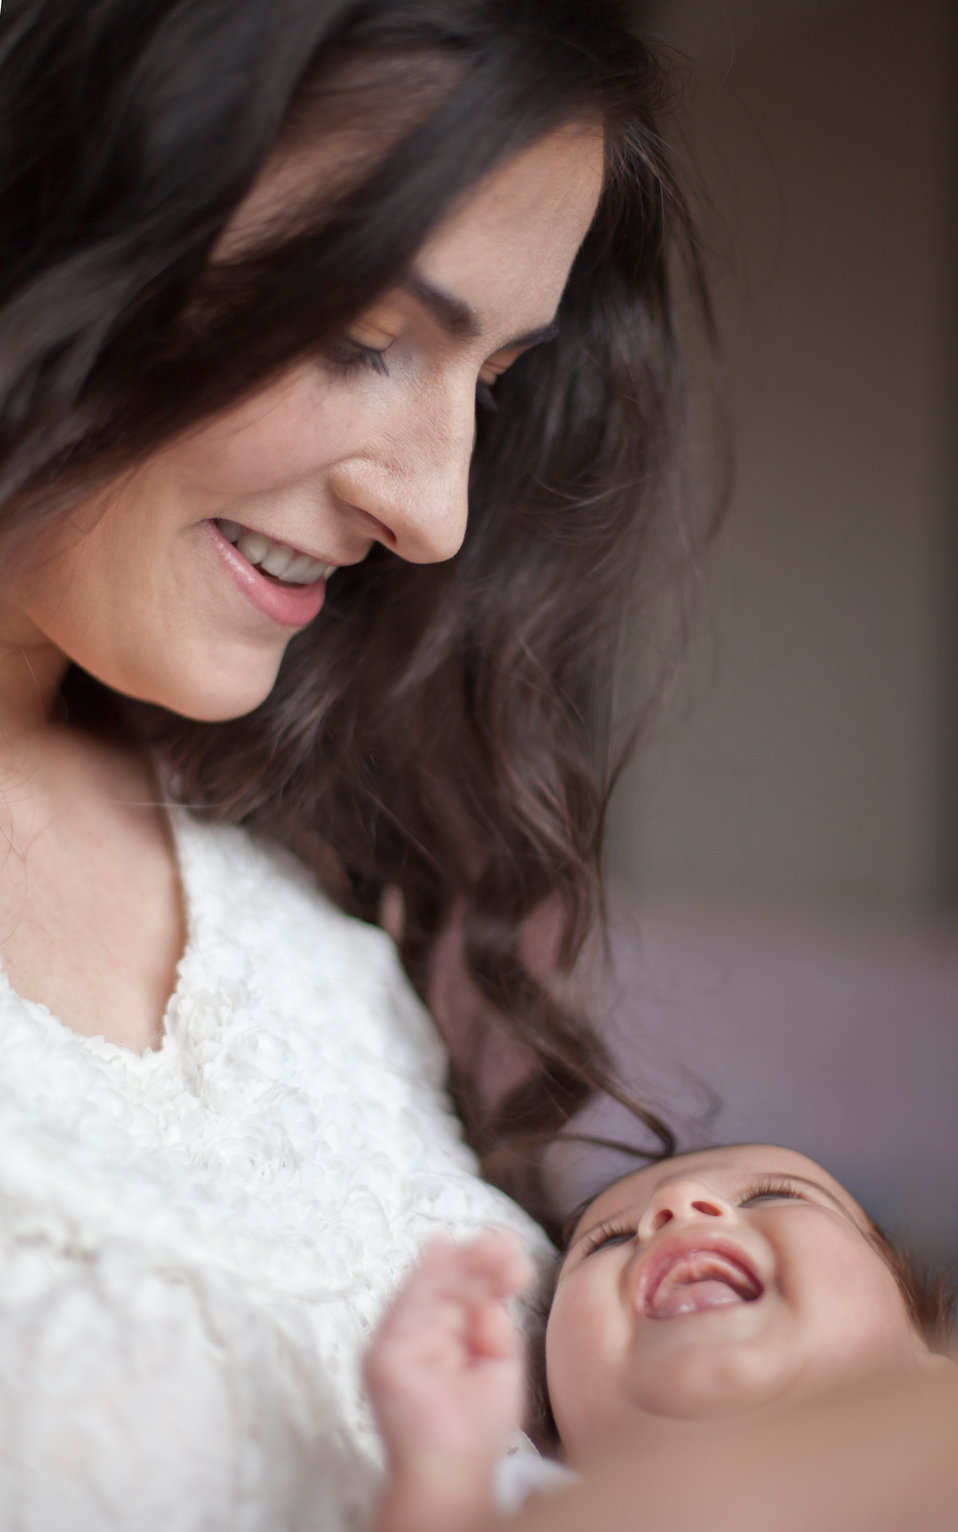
Baby with mother.